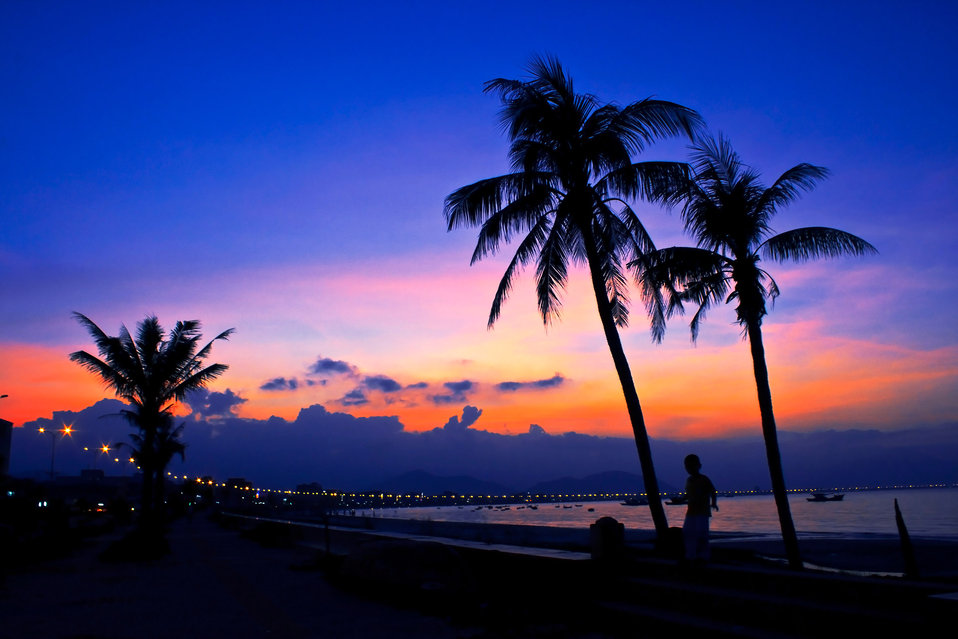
A boy in sunset

Sunset on the bay of danang in central vietnam.